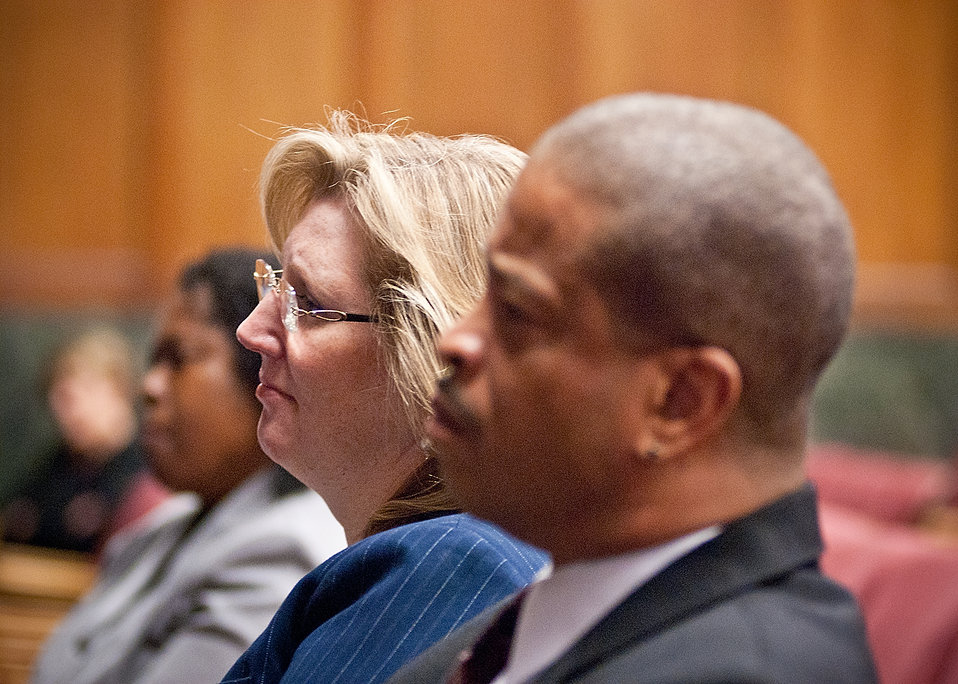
Alison Levy, Departmental Disability Employment Program Manager, Diversity Division, Office of Human Resources Management (left) and William P. Milton, Jr., Deputy Director, Office of Human Resources Management listen to panel members during the U. S. Department of Agriculture National Disability Employment Awareness Month event in Washington, DC, Wednesday, October 5, 2011. Agriculture Secretary Tom Vilsack is dedicated to establishing the USDA as the lead Federal agency in employing individuals with disabilities. The theme for the event is “Profit by Investing in Workers with Disabilities.” USDA is committed to ensuring that all our programs are accessible and inclusive of individuals with disabilities.